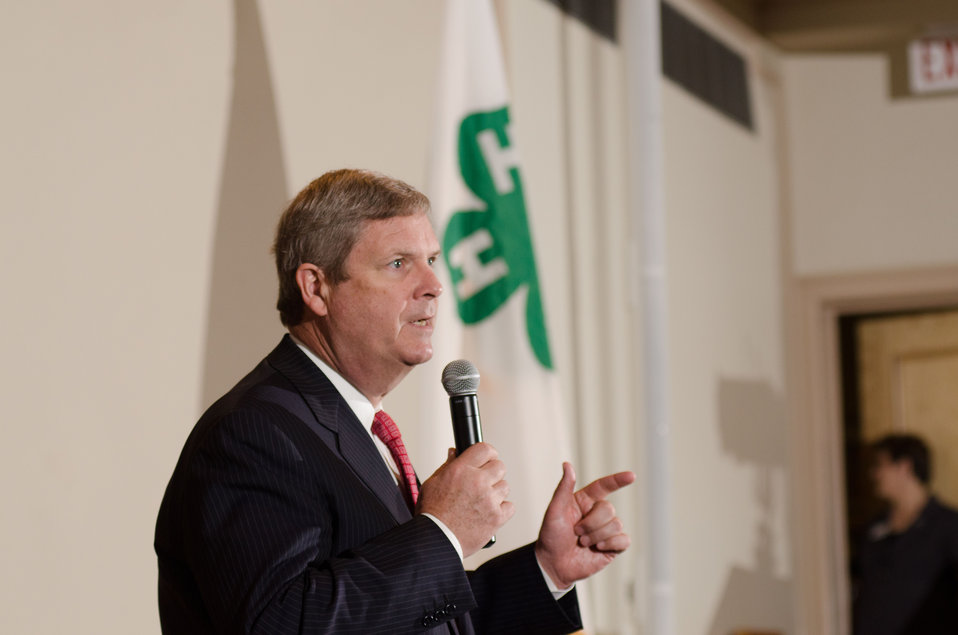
Agriculture Secretary Tom Vilsack speaks with 4-H members at the National 4-H Youth Center in Chevy Chase, MD, on Monday, March 26, 2012. 'For almost 100 years, USDA and 4-H have partnered to produce some of our nation's best and brightest, including farmers and ranchers who have supported the American economy and put food on our tables,' Vilsack said. 'You all are tomorrow's leaders. We need you to think big, innovate and help tackle the important challenges standing between us, a stronger middle class and a stronger nation.'